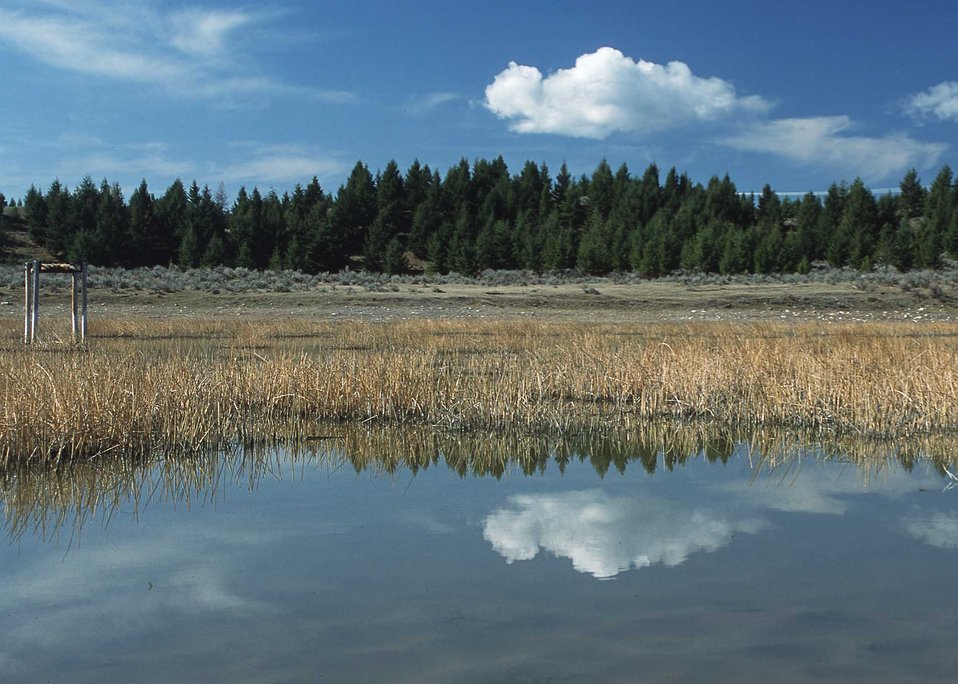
Wetland in Powell County, MT.